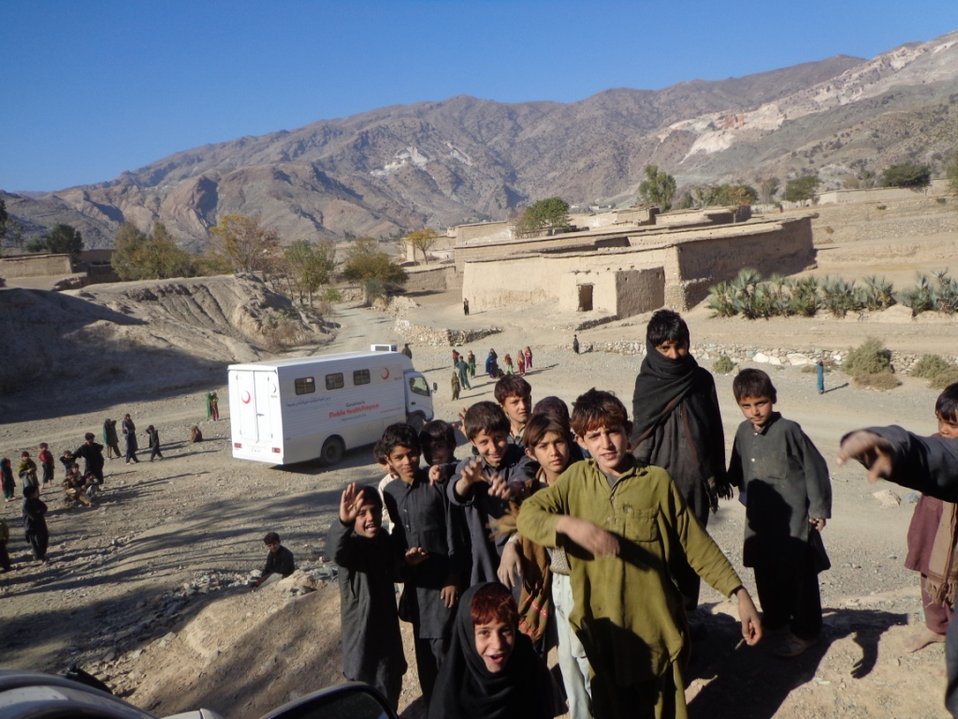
Childre gathered at MHUs camp in Hamza Khel Mohmand Agency dated 12 April 2013

Mobile Health Unit (Purchased and fabricated wit financial support from USAID) are providing basic health services in the remote areas